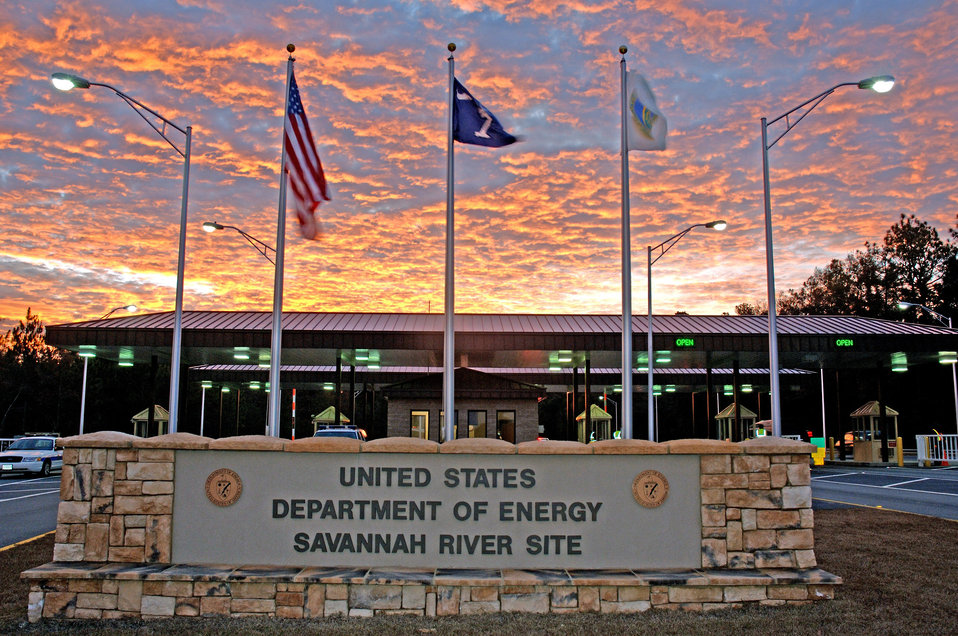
Savannah River Site at sunset in Aiken, South Carolina.

SRS is recognized for support of national security objectives, scientific innovation, and stewardship of the environment.